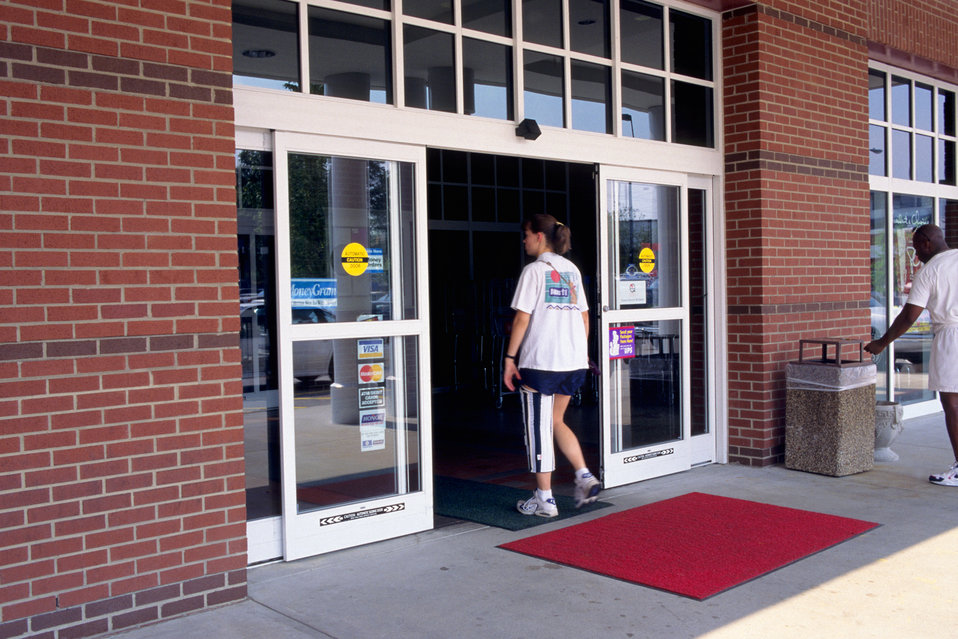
In this 1996 image, a woman who was wearing a leg brace, which reduced mobility of her left knee, was about to enter a grocery store through its automatic, electronic eye-controlled doorway. Being that the doors were automatic, it reduced the amount of effort needed by all who'd enter the doorway, which included those experiencing reduced mobility such as this woman with an impaired gait. Widely used, 'no-touch' automatic doors accommodate all types of users, including the mobility-challenged, as well as those whose hands are filled with purchases. Simple, and in common use, the wide automatic door is an excellent example of Universal Design. Other facilities should, where possible, consider this option.